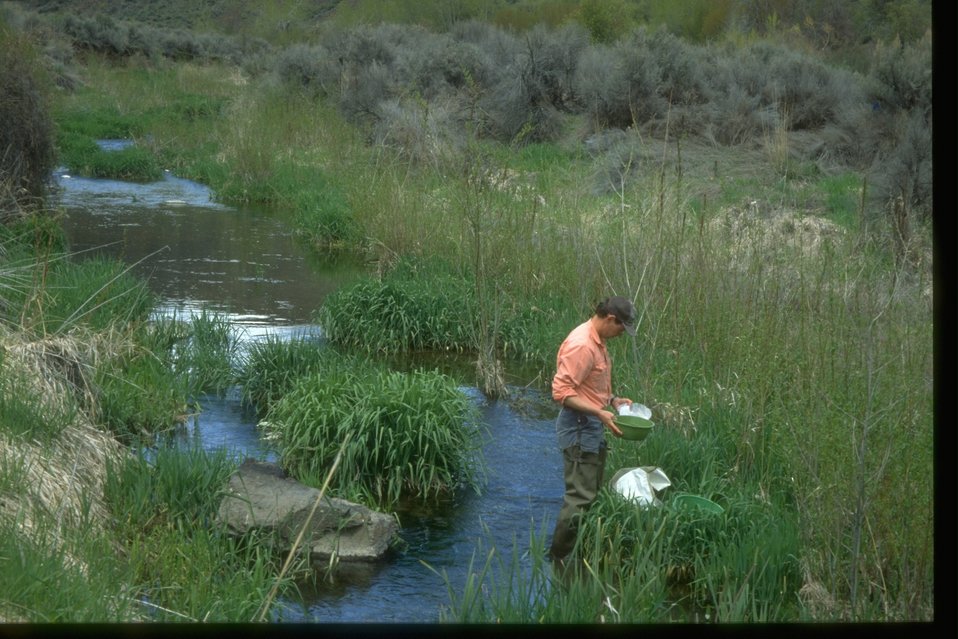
Sampling aquatic macro invertabrates in Douglas Creek.